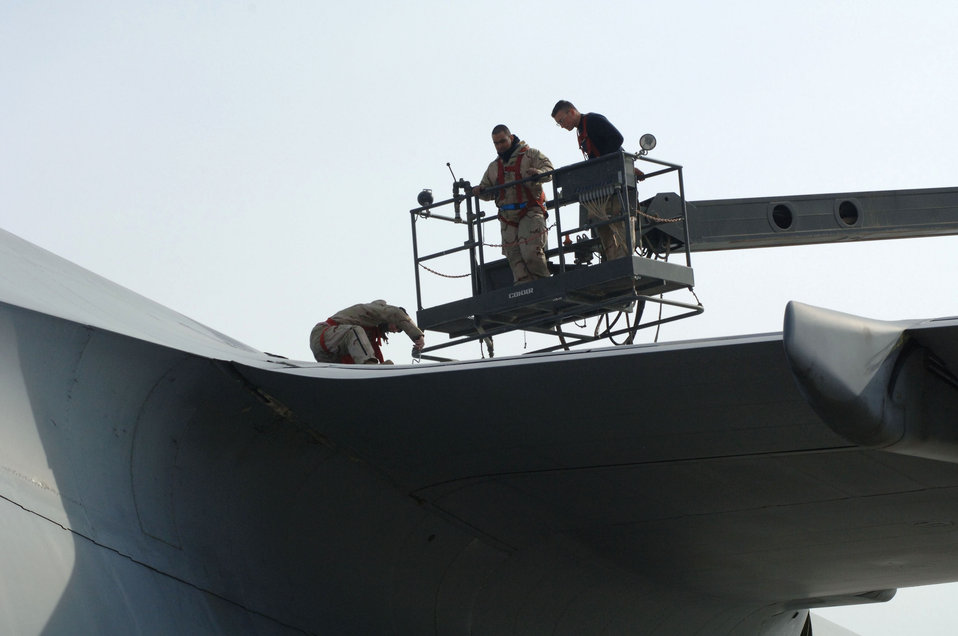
Balad Airmen take on galactic mission

Members of the 721st Air Mobility Operations Group Det. 5 perform maintenance on a C-5 Galaxy Jan. 12 at Balad Air Base, Iraq. The 721st AMOG provides en route maintenance and support for the Air Force's C-5 and C-17 Globemaster III aircraft. The C-5 is one of the largest aircraft in the world, and the largest airlifter in the Air Force inventory. The Airmen are deployed from Travis Air Force Base, Calif.